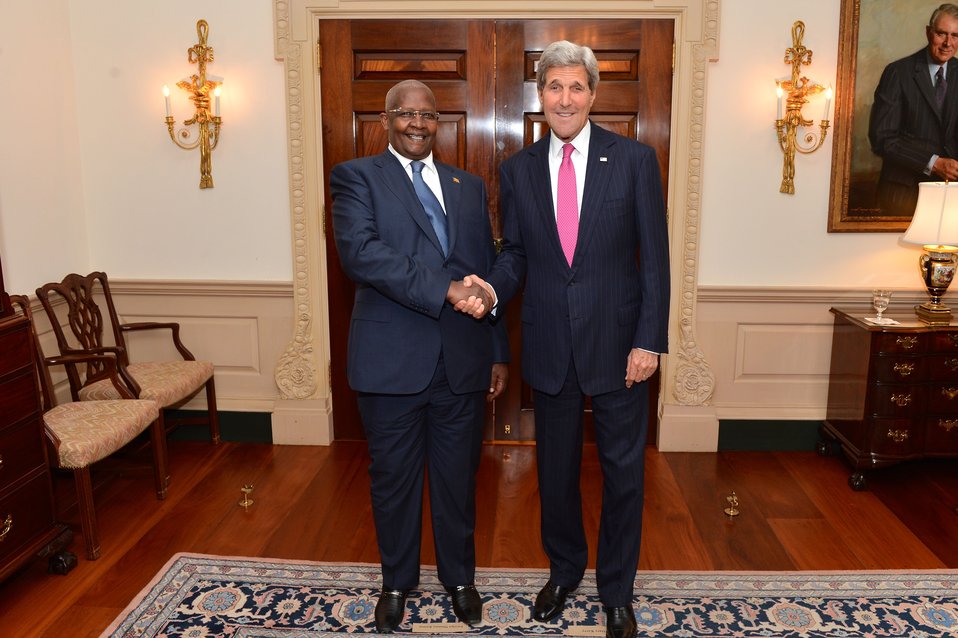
Secretary Kerry Meets With Ugandan Foreign Minister Kutesa

U.S. Secretary of State John Kerry poses for a photo with Ugandan Foreign Minister Sam Kutesa before their bilateral meeting at the U.S. Department of State in Washington, D.C., on June 12, 2014.